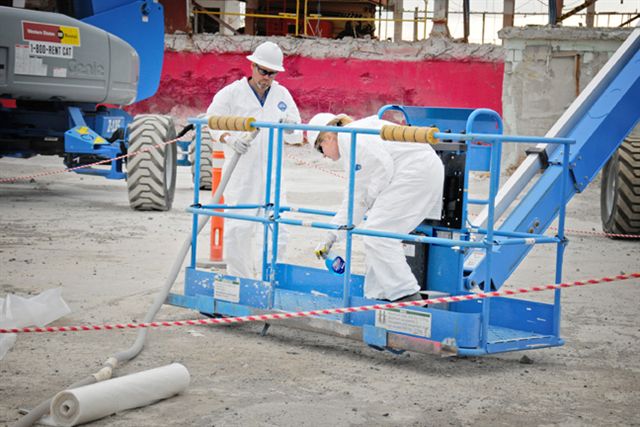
RAN DD INTEC S82 CPP-601 TRANSITEREMOVAL 072610 P6554-37 A